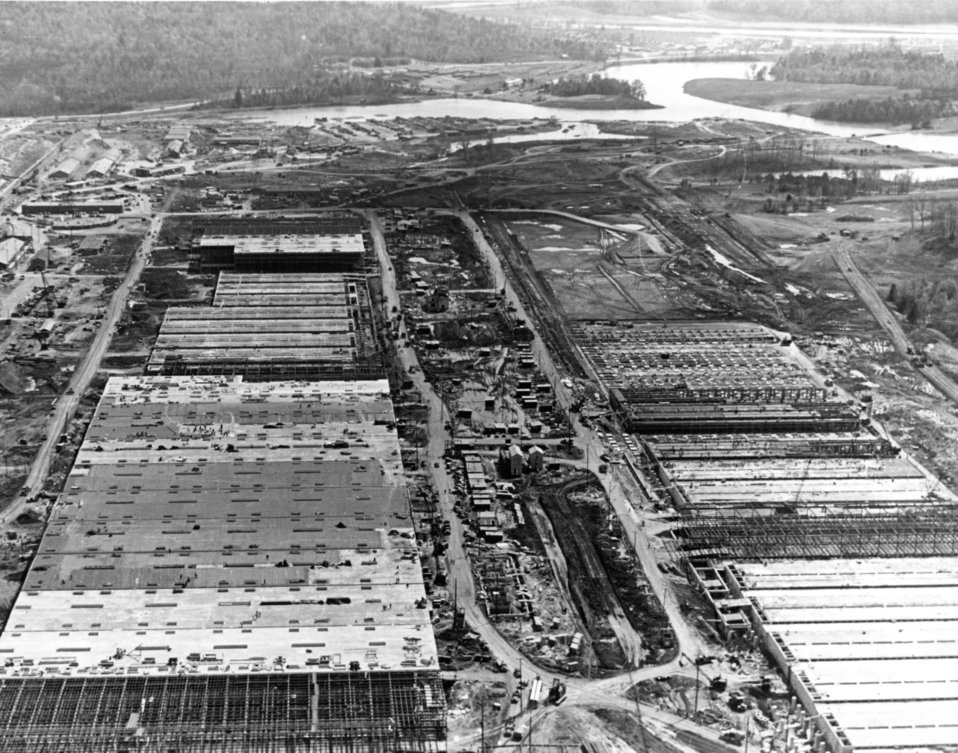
K-25 at Oak Ridge